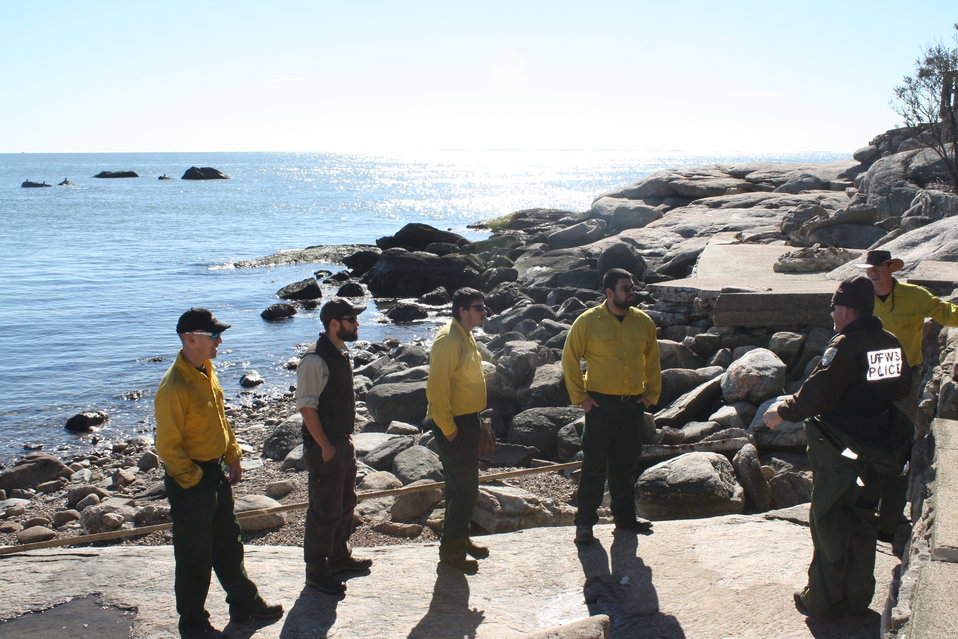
Beginning repairs at Stewart B. McKinney National Wildlife Refuge (CT)

Refuge Law Enforcement Officer Sean Healy walks a crew through Outer Island to assess damage.